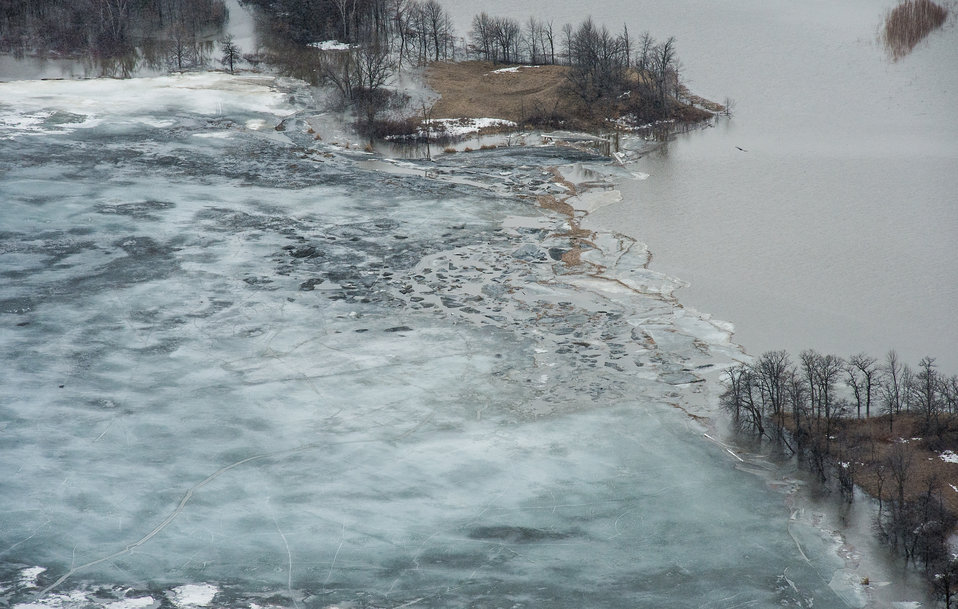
Renwick Dam, in Pembina County, ND, part of the Red River basin, on Wednesday, May 1, 2013. For information about this and other programs from the USDA Red River Basin Initiative (RRBI) please see www.mn.nrcs.usda.gov/news/features13/RRBI.html.